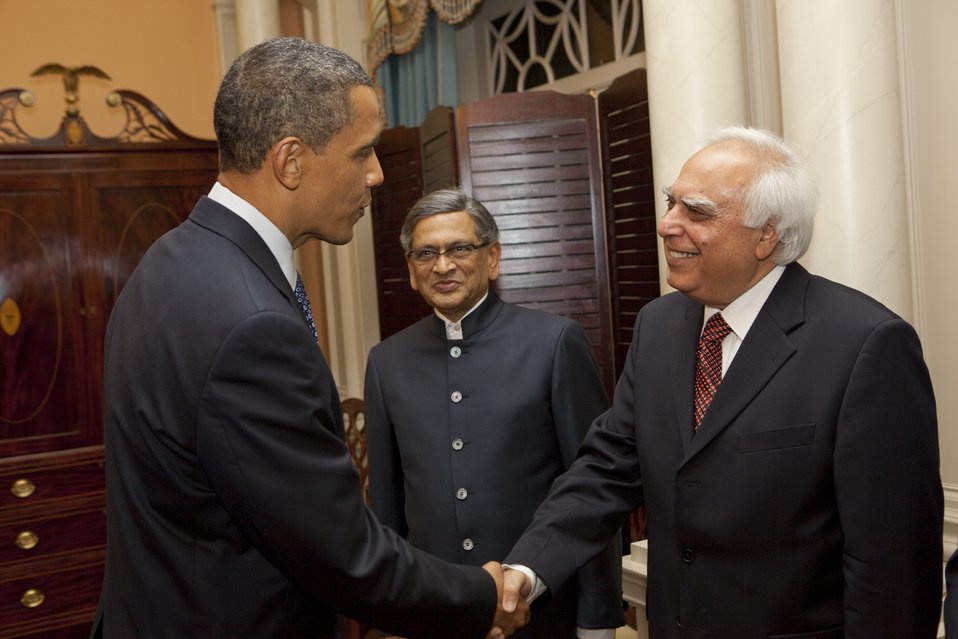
President Obama Shakes Hands With Indian Minister for Human Resource Development Shri Kapil Sibal

Indian Minister of External Affairs S.M. Krishna looks on as U.S. President Barack Obama shakes hands with Indian Minister for Human Resource Development Shri Kapil Sibal at the U.S.-India Strategic Dialogue reception at the the U.S. Department of State in Washington, D.C., on June 3, 2010.